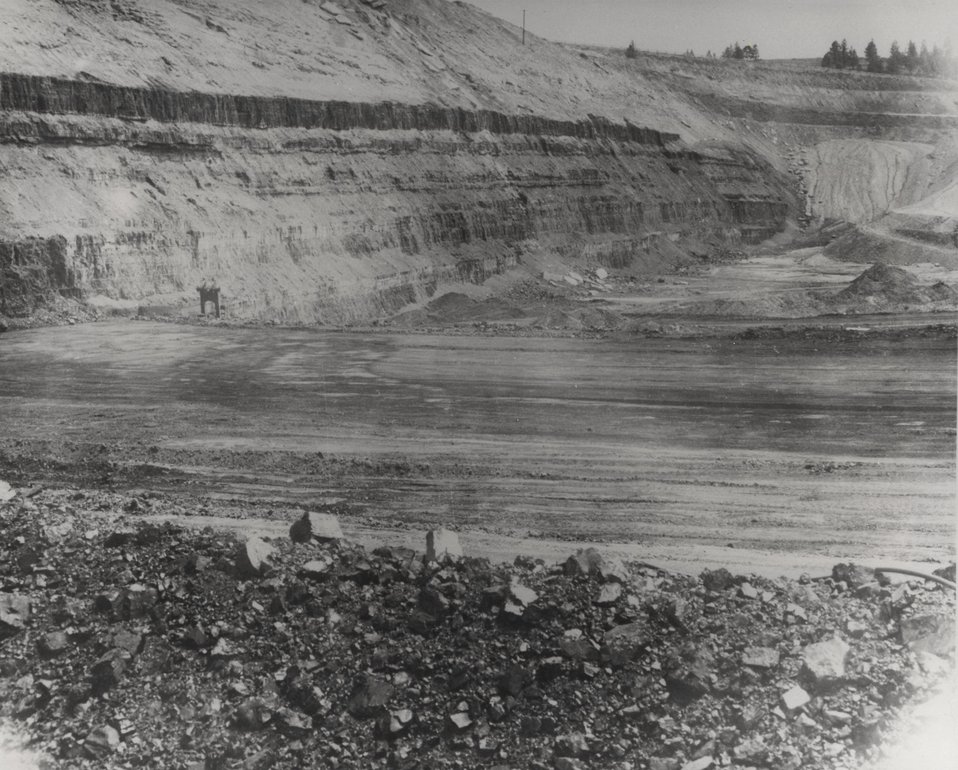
Fifty-six feet of coal are mined in the Zowada pit of the Big Horn Coal Company near Sheridan, Wyoming. c. 1976